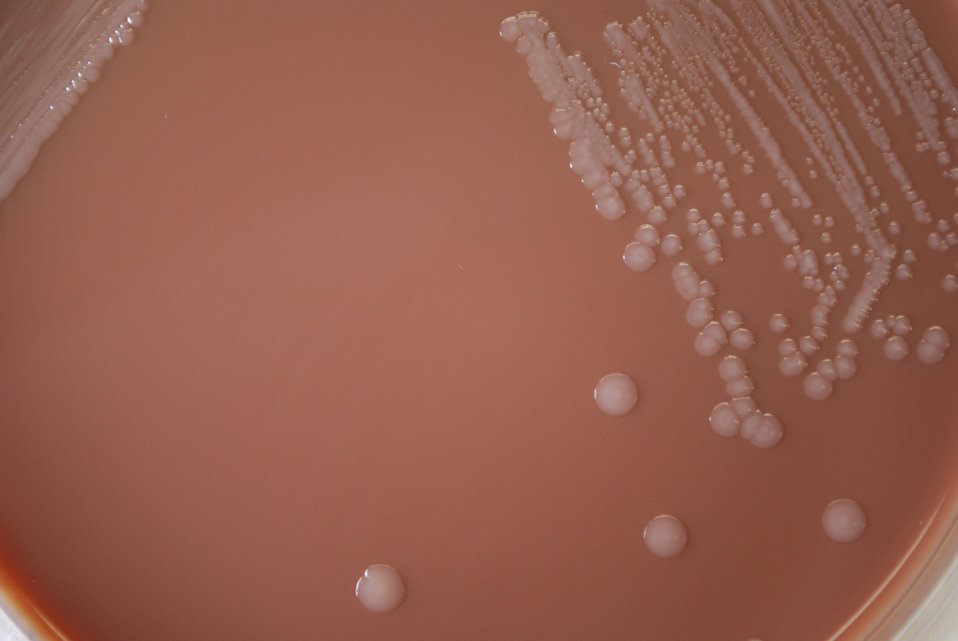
This closer view of PHIL 12262 depicts the colonial morphology displayed by Gram-negative Yersinia pestis bacteria, which was grown on a medium of chocolate agar, for a 72 hour time period, at a temperature of 37�C. Y. pestis bacteria cause the infectious disease known as plague.